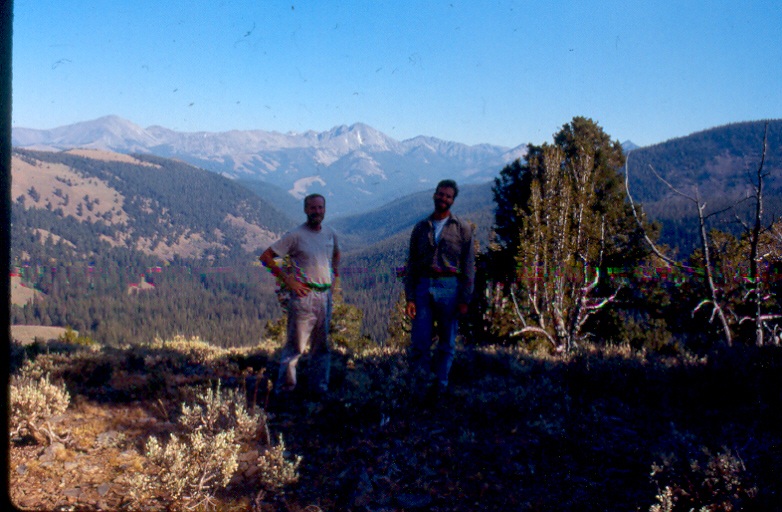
People Salmon Field Office UCSC Upper Columbia Salmon Clearwater District